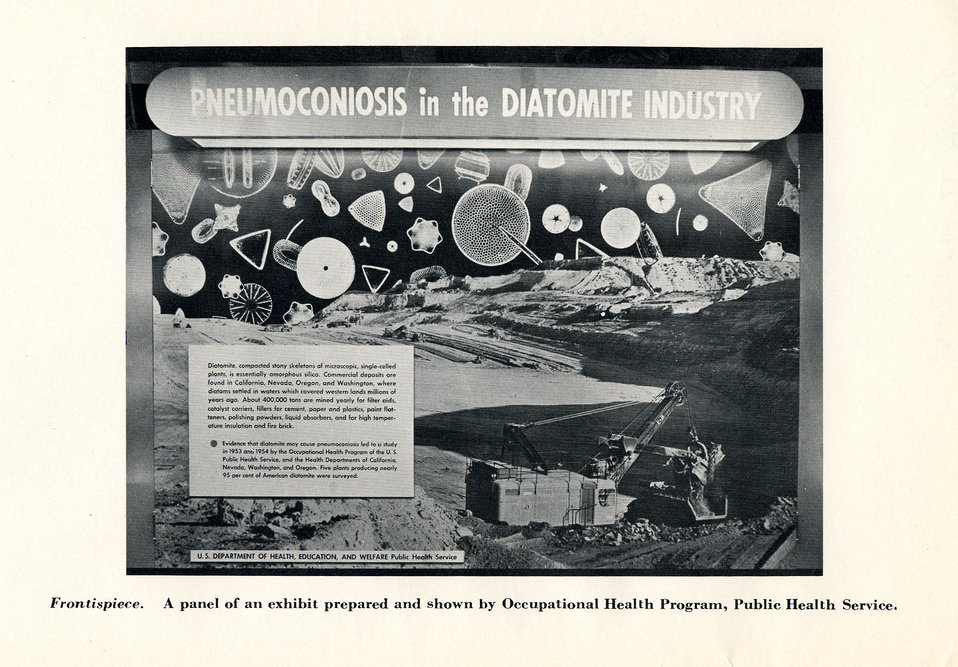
From 1958, this historical image was provided by the Center for Disease Control's (CDC), National Institute for Occupational Safety and Health (NIOSH). It was the frontispiece for U.S. Public Health Service (USPHS) publication, No. 601, entitled, 'Pneumoconiosis in Diatomite Mining and Processing', 1958. The publication featured the results of the 1953-1956 USPHS study of miners' who'd been exposed to airborne particulates in diatomaceous earth mining and processing plants, and the resultant negative health consequences including respiratory, ocular, and dermal disorders. The study cohort involved participants from three different western states.